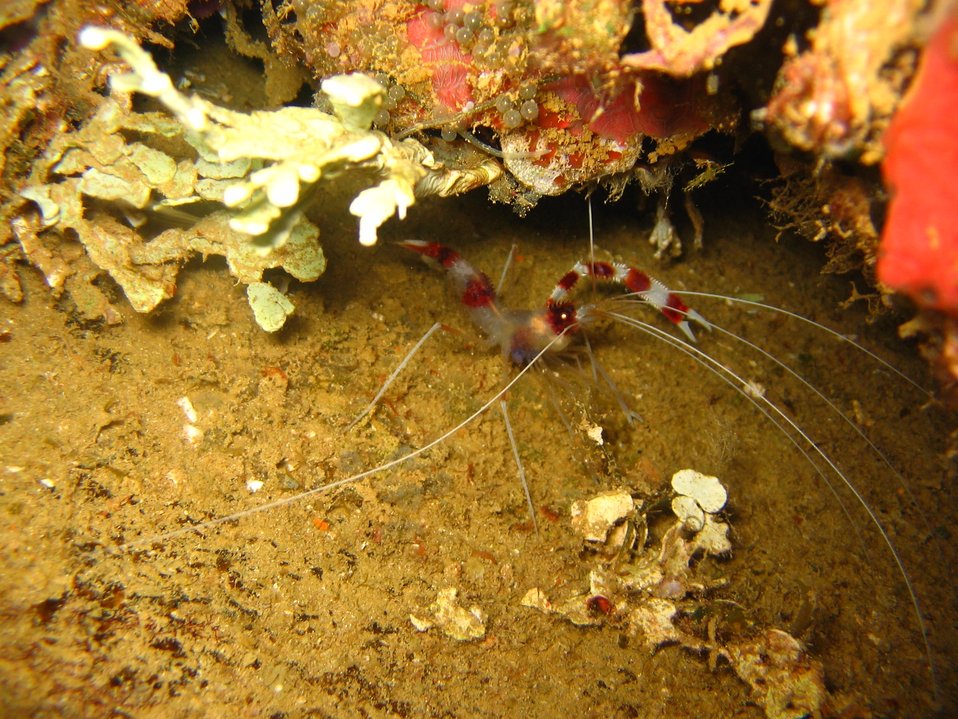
Cleaner shrimp (Stenopus hispidus).